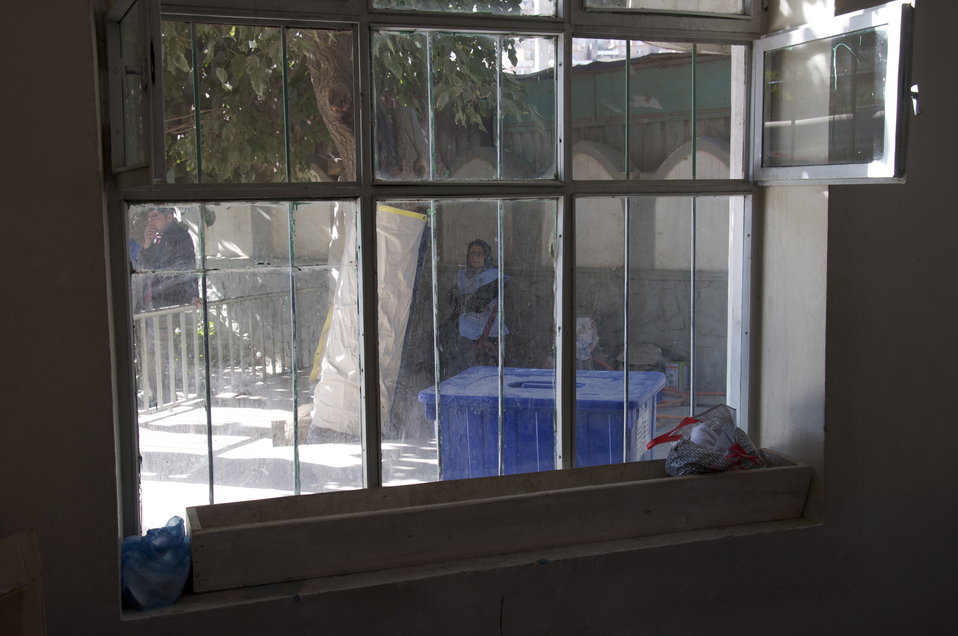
Kabul Polling Center